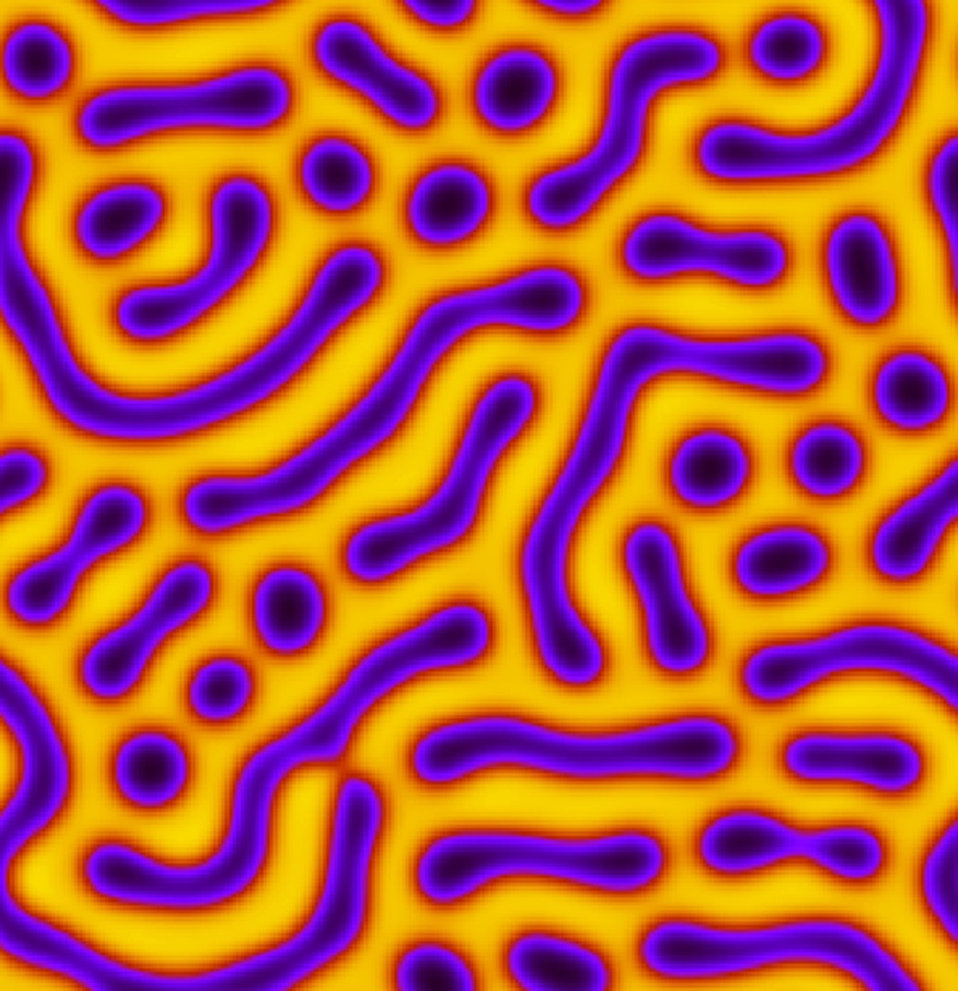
Polymer Mixtures

Computer models of polymer mixtures studied at NIST can help develop improved lithography resists for nanomanufacturing.